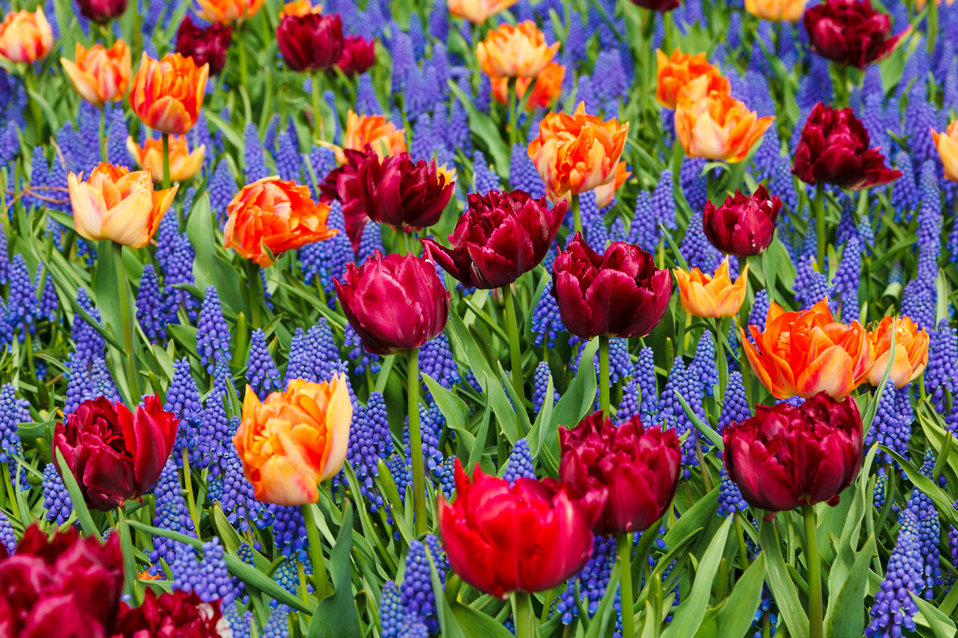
Vivid tulips and grape hyacinths

Vivid orange and purple tulips and blue grape hyacinths among green leaves.